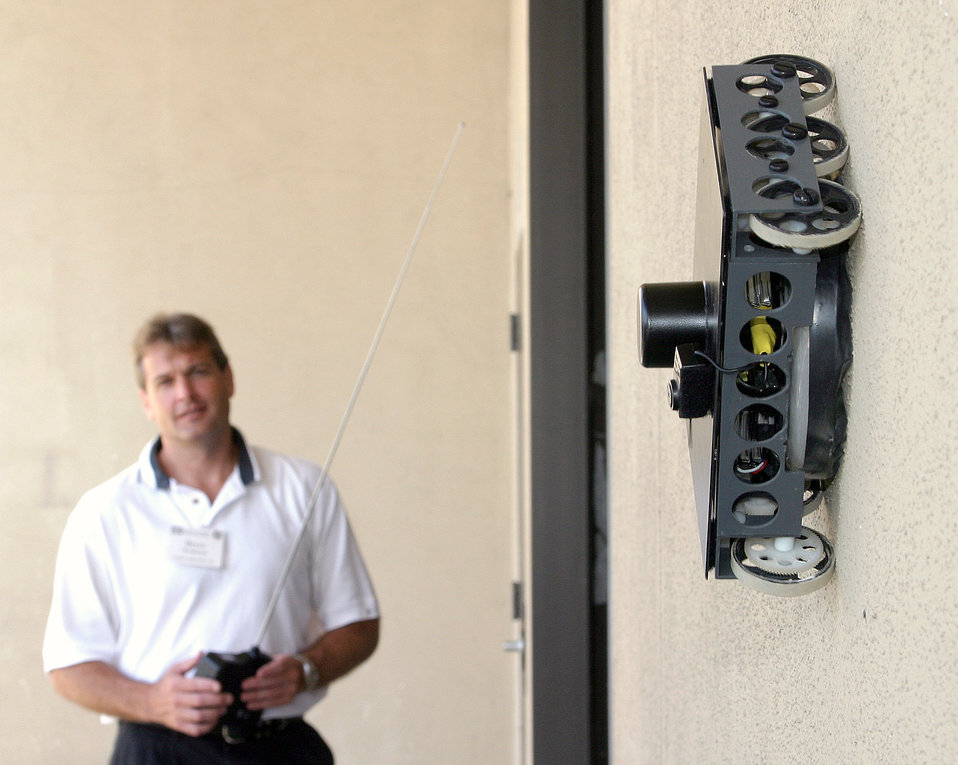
Wallcrawler

SAN ANTONIO -- Bryce Wiedeman motors a six-wheeled robot along a wall by remote control during the Lackland Force Protection Battlelab Exposition on Aug. 6 at the Southwest Research Institute here. A process called